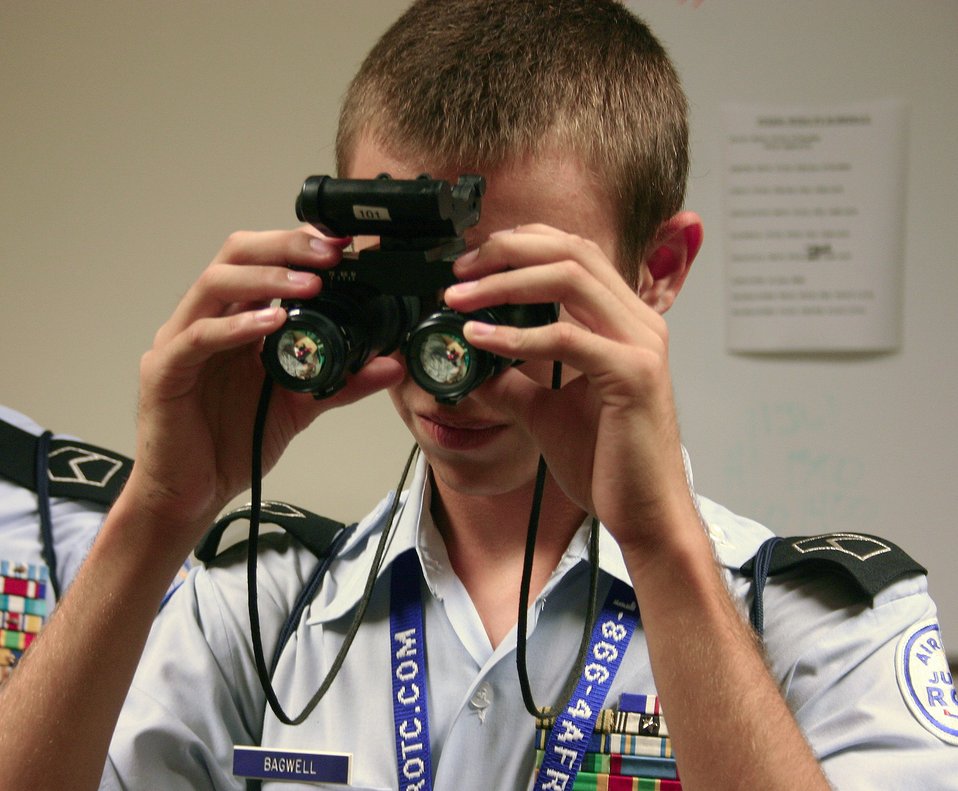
Top Junior ROTC cadets explore AF opportunities

Junior ROTC Cadet Nicolas Bagwell from Texas tries out a pair of night vision goggles during a visit to the 58th Special Operations Wing at Kirtland Air Force Base, N.M . More than 50 cadets from 20 states nationwide visited the 58th SOW as part of the 2008 Air Force Junior ROTC Aerospace and Technology Honor Camp held July 26-31.